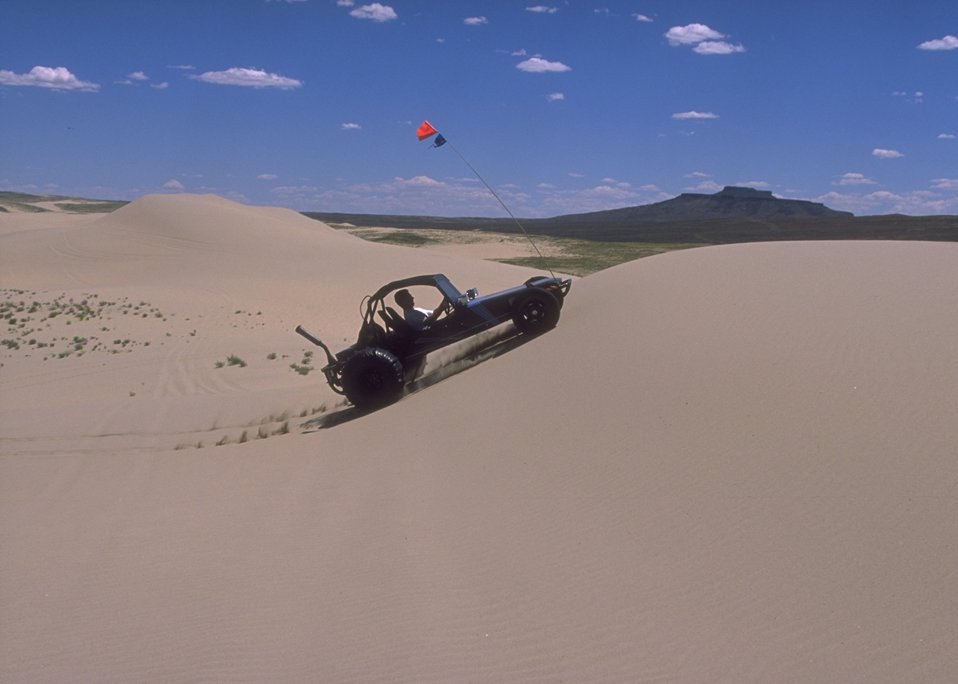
Sand Dunes OHV Area, Rock Springs Field Office.